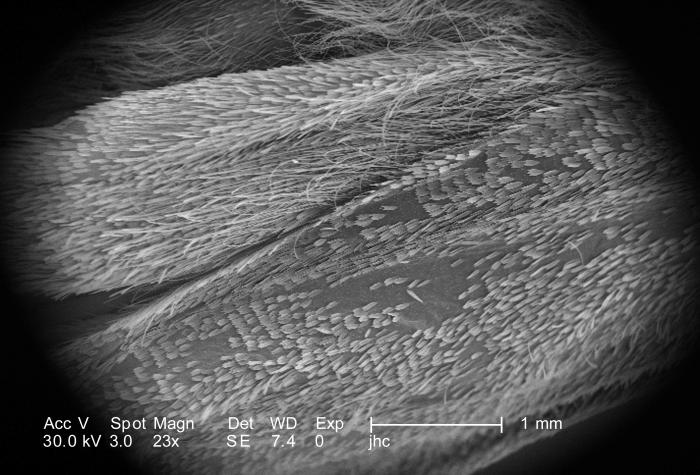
This scanning electron micrograph (SEM) depicted a region of the exoskeletal surface of an unidentified white moth, which was found deceased on the ground in Decatur, Georgia. Under this low magnification of only 23X, you'll note the presence of numerous 'scales', which are actually outcroppings of the surface, and are composed of the same material, a durable substance known as 'chitin'.